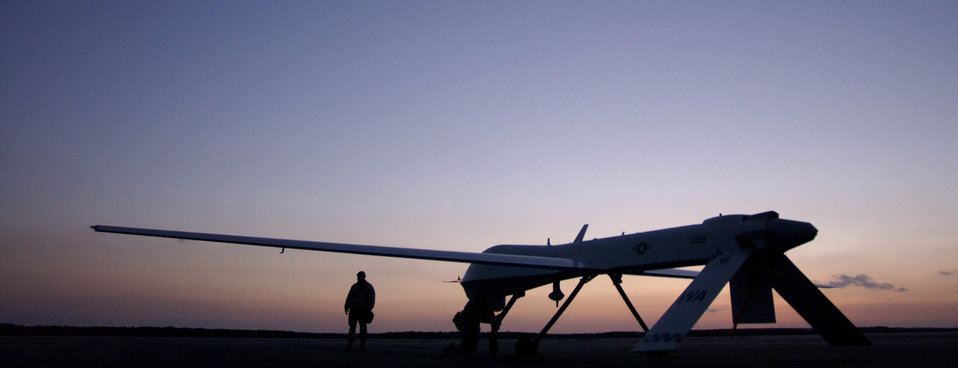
Preadator sortie

OPERATION IRAQI FREEDOM -- The Predator is a high-altitude aerial reconnaissance plane that is used for surveillance serving as eyes in the sky for ground forces.